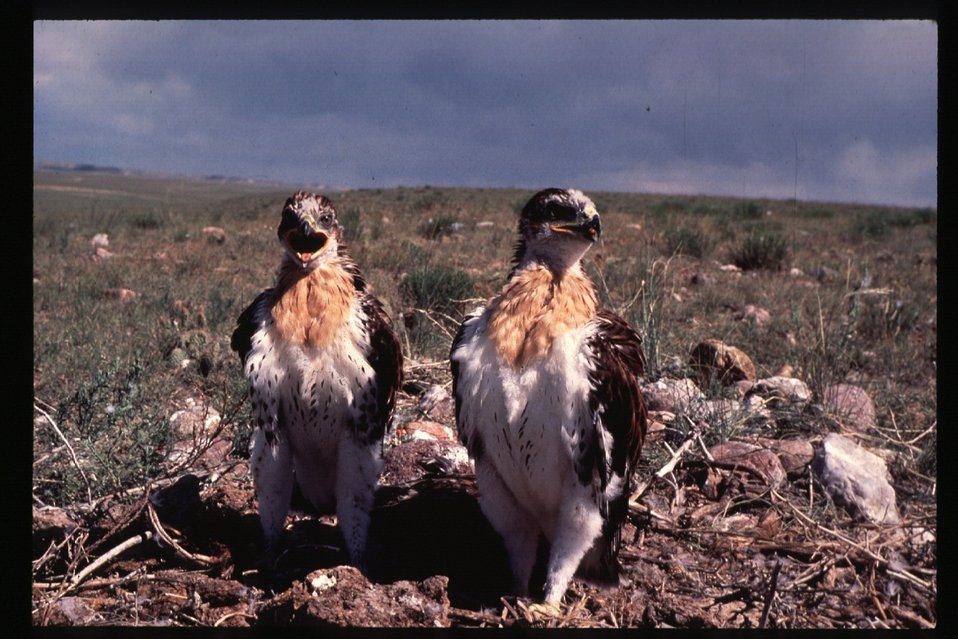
Ferruginous Hawks Birds of Prey National Conservation Area BOP NCA Owyhee Field Office LSRD Lower Snake River District